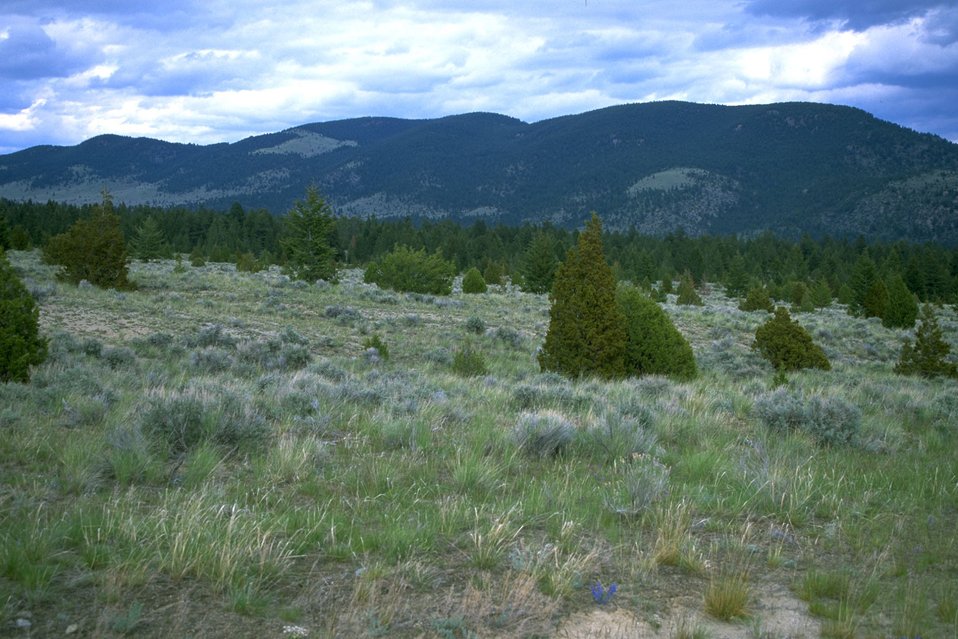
Wildflowers, grass and Juniper trees